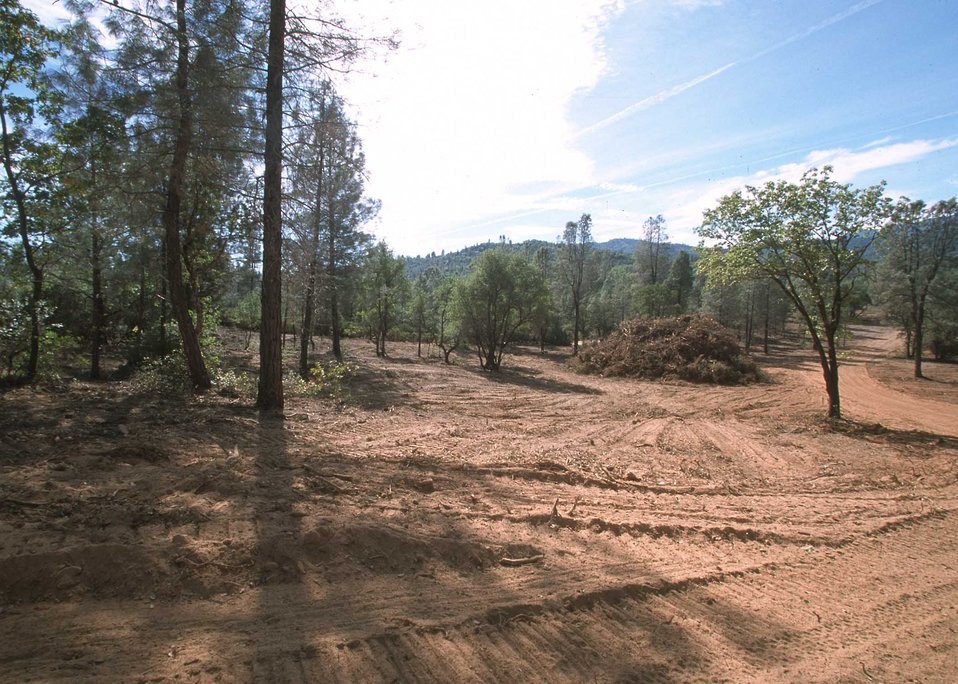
Fuel Break.